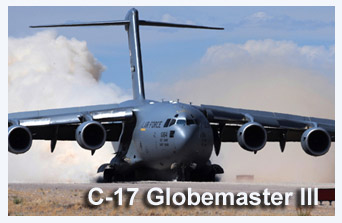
C-17 Globemaster III

On June 14, 1993, the 437th Airlift Wing at Charleston AFB, S.C., received its first operational C-17A Globemaster III. The C-17 Globemaster III is the newest, most flexible cargo aircraft to enter the airlift force.